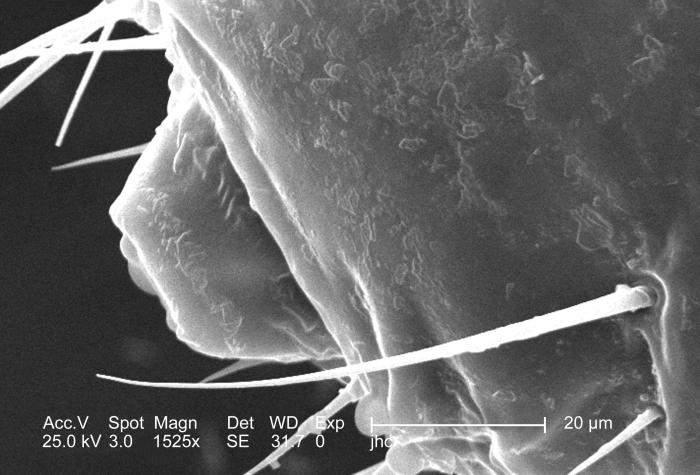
Magnified 1525x, this 2006 scanning electron micrograph (SEM) depicted an enlarged dorsal view of the mouth region of a male louse, Pediculus humanus var. corporis. In this particular view, the louse's 'haustellum' is withdrawn, or internalized inside the mouth region of the insect's cephalic region. The haustellum is a tube-like structure, fromed from what is believed to be a modification of the labium, but is armed with teeth, which act to grab, and hold on to the skin surface of its host while obtaining its blood meal. The insect pierces the host's skin with its sharply-pointed set of three stylets, which together for what is termed the fascicle. Note PHIL# 9214, 9216, in which case a lose is in its feeding mode on the skin surface of its host.